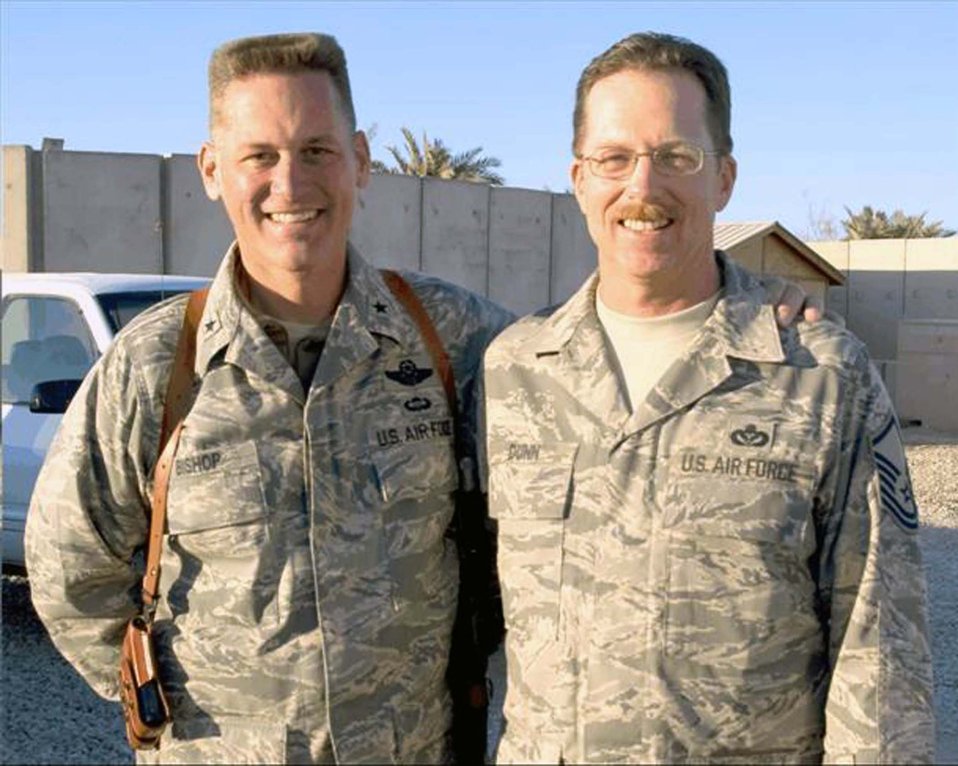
From one sandbox to another

Brig. Gen. Brian Bishop, 332nd Air Expeditionary Wing commander at Joint Base Balad, Iraq, and Master Sgt. Jeffrey Dunn, 407th Expeditionary Civil Engineer Squadron horizontal section chief at Ali Base, Iraq, pose in another